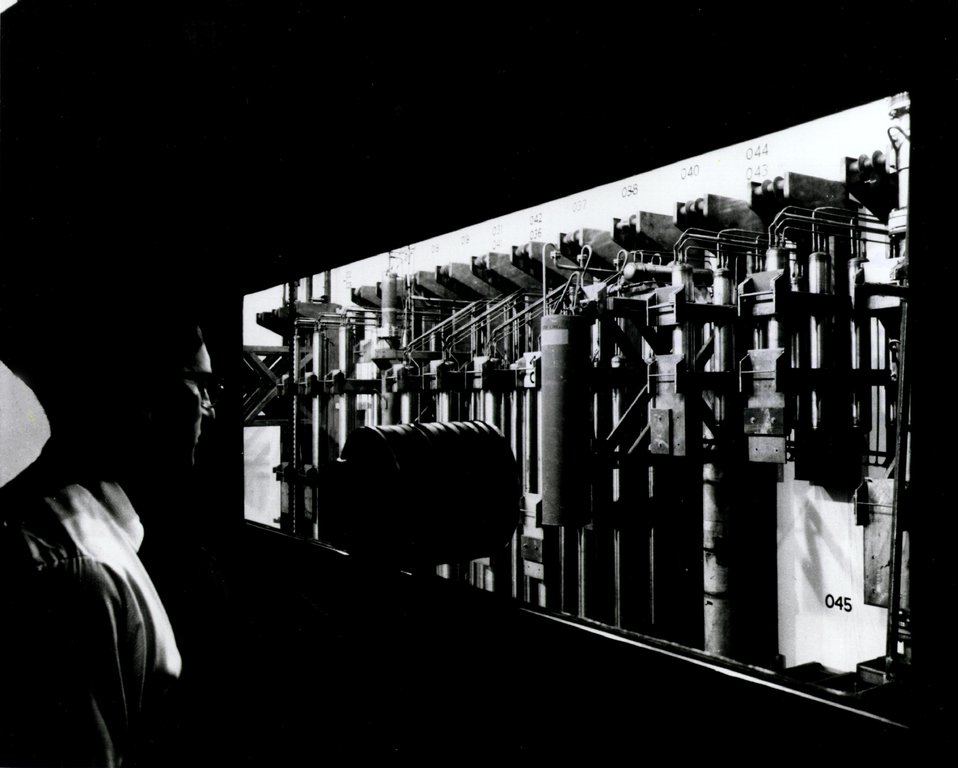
View, taken through several inch-thick shielding-glass, shows some of the process tanks used in the recovery of plutonium from scrap and process residue at the Hanford chemical processing operations. Circa 1968.